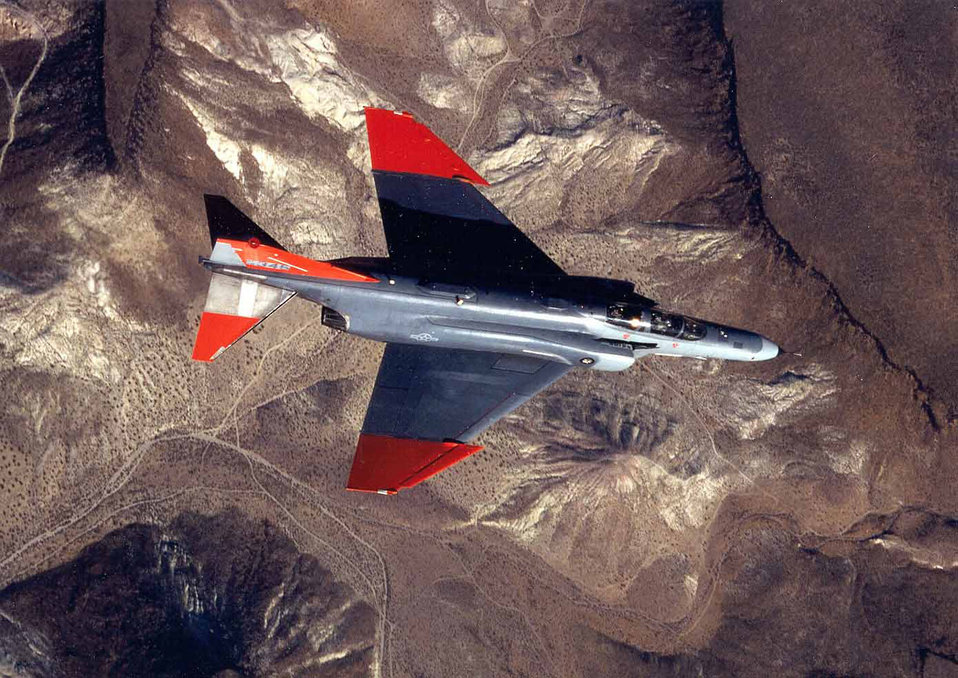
QF-4 Drone

A QF-4 Drone in flight as it is tracked by a missile at Tyndall AFB, Fla. The drones are used as moving targets to test weapons.